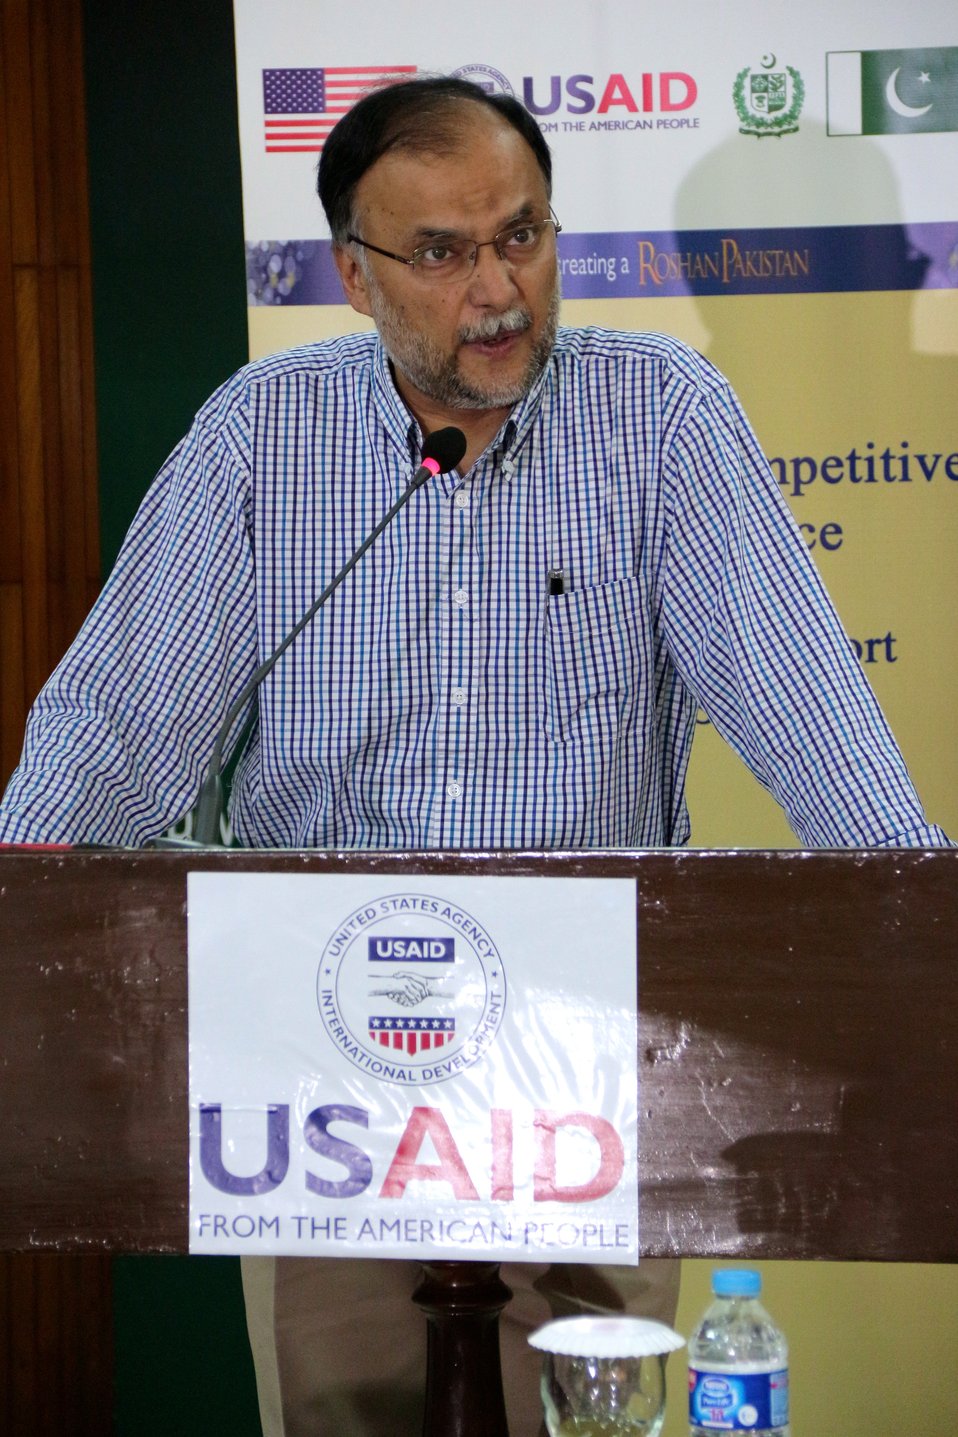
PSSP - CGP-IV Research Conference, June 14, 2014

Chief Guest, Federal Minister for Planning, Development and Reforms and Deputy Chairman of the Planning Commission, Prof. Ahsan Iqbal sharing his views at Inaugural Session of the Fourth Research Competitive Grants Conference organized by PSSP